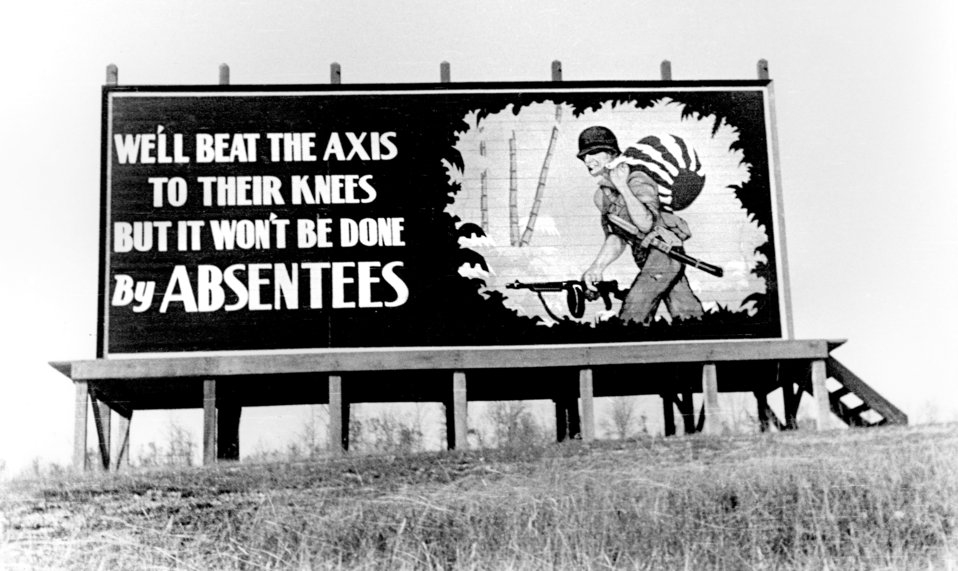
Billboard Throughout Oak Ridge 1943

roll121-6 DOE photo Ed Westcott 11-11-1943 Oak Ridge Tennessee